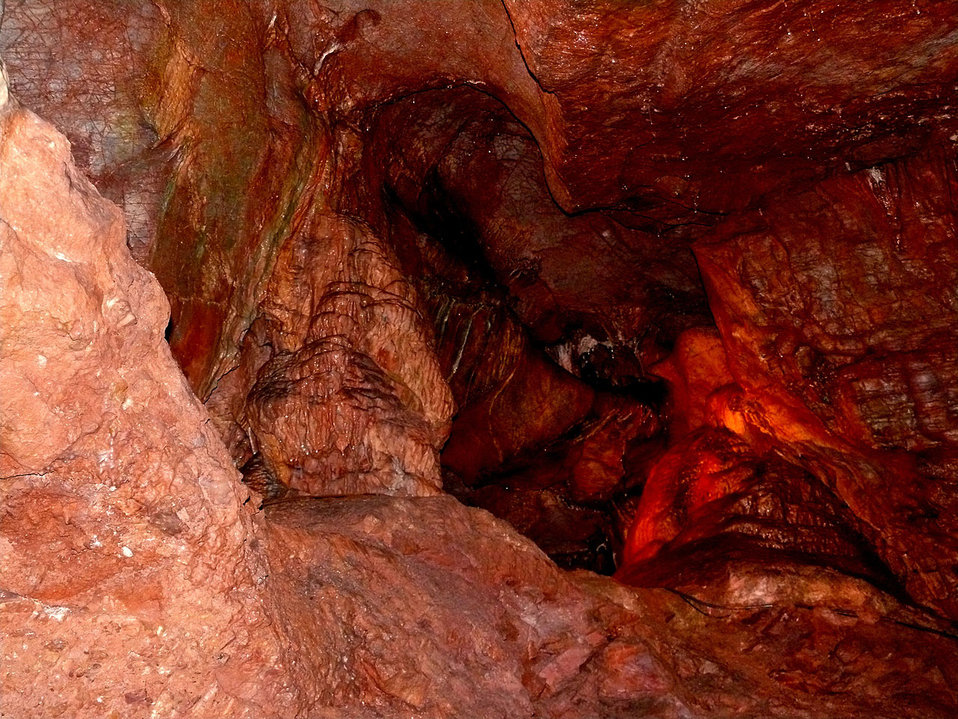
Kents cavern

Cave in torquay.